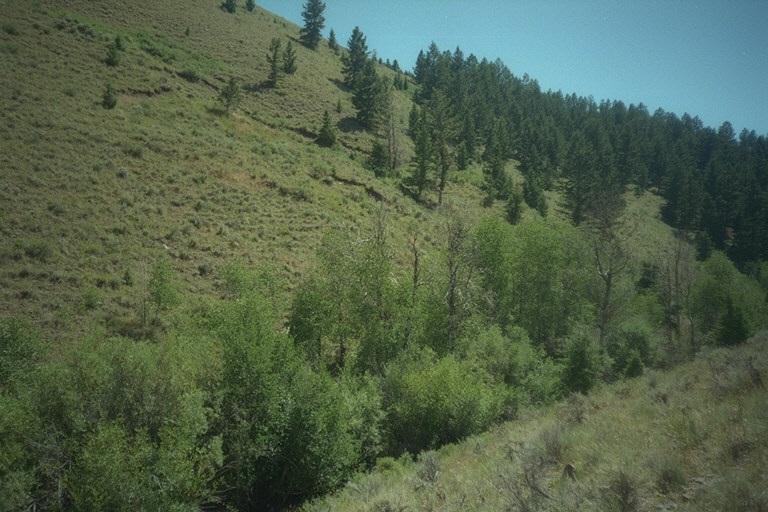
Riparian area Public Lands Salmon Field Office UCSC Upper Columbia Salmon Clearwater District